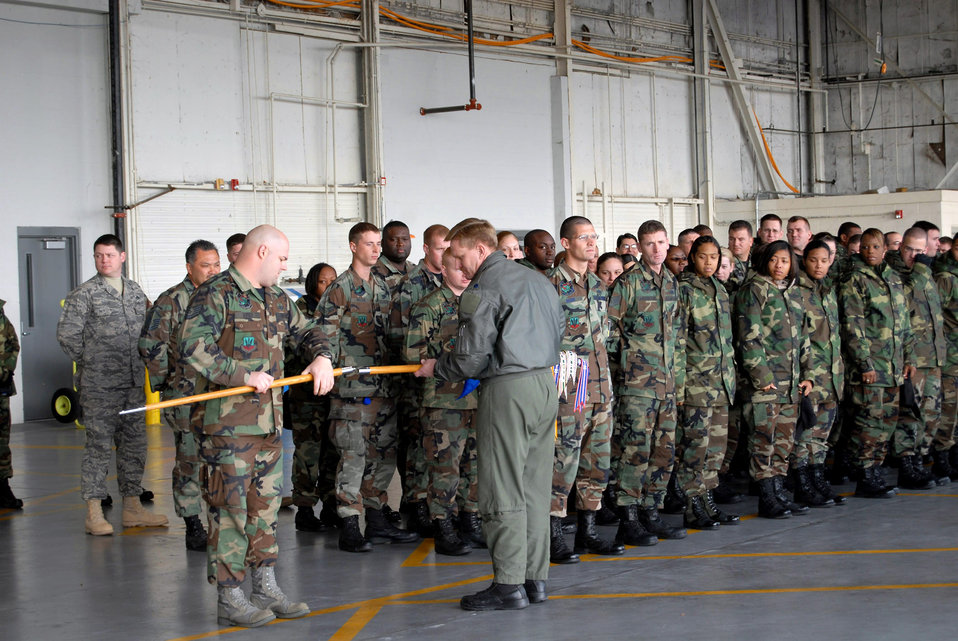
Pope says goodbye to last A-10s

Tech. Sgt. Gary Kimes and Lt. Col. Russell Myers retire the units colors Dec. 19 at Pope Air Force Base, N.C. The last three A-10 Thunderbolt IIs left for Moody Air Force Base, Ga. Sergeant Kimes is assigned to the 74th Fighter Squadron, and Colonel Myers is the 74th FS commander.